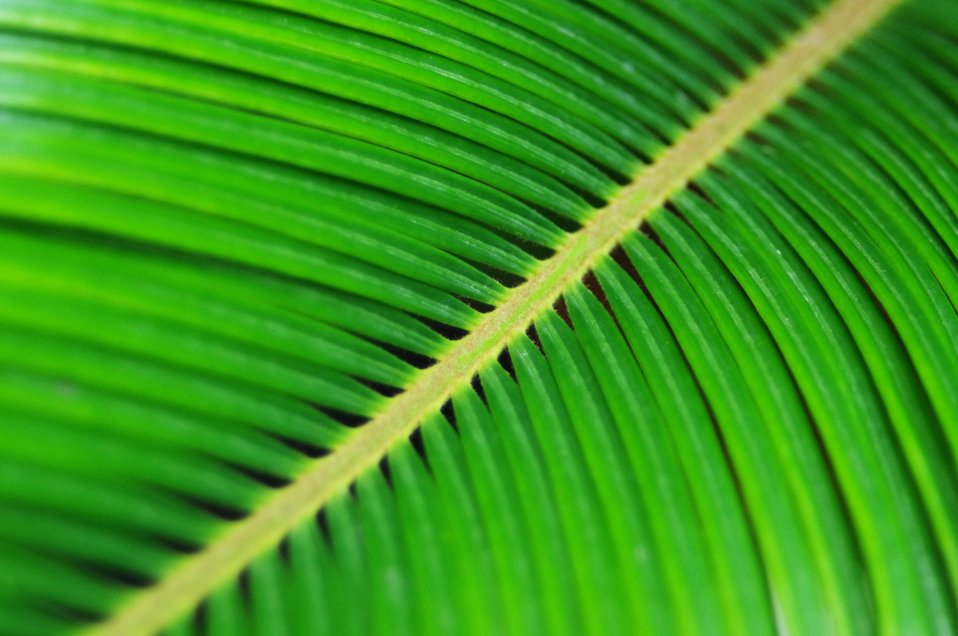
Fern abstract.